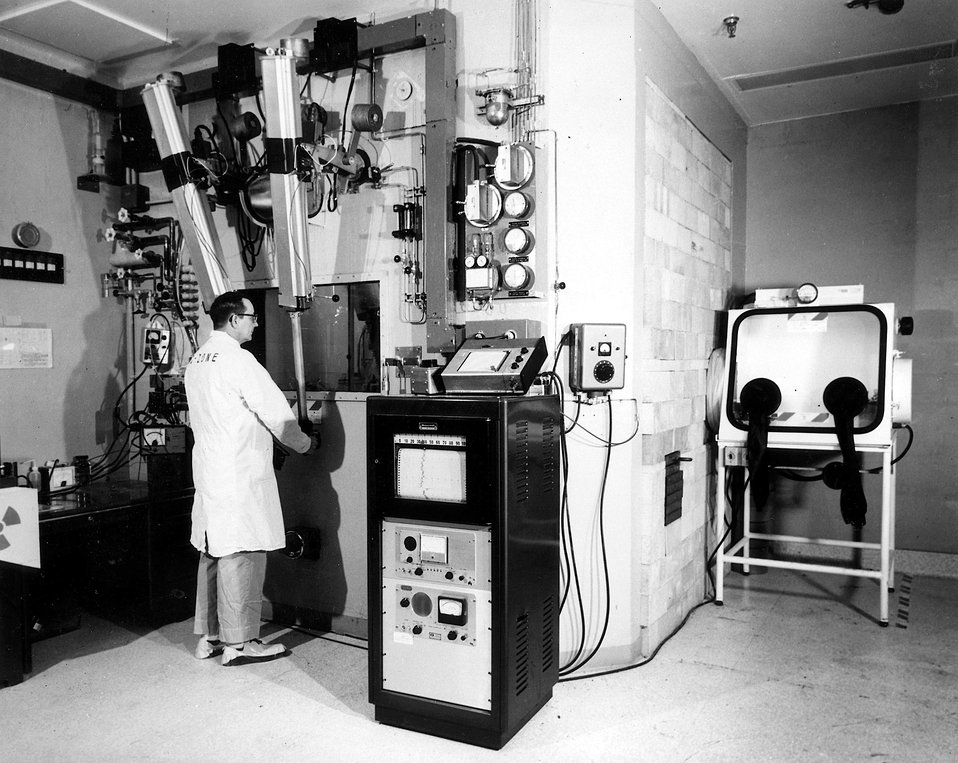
Shielded facilities are required for handling purified californium product from irradiation High Flux Isotope Reactor (HFIR) targets. c. 1972